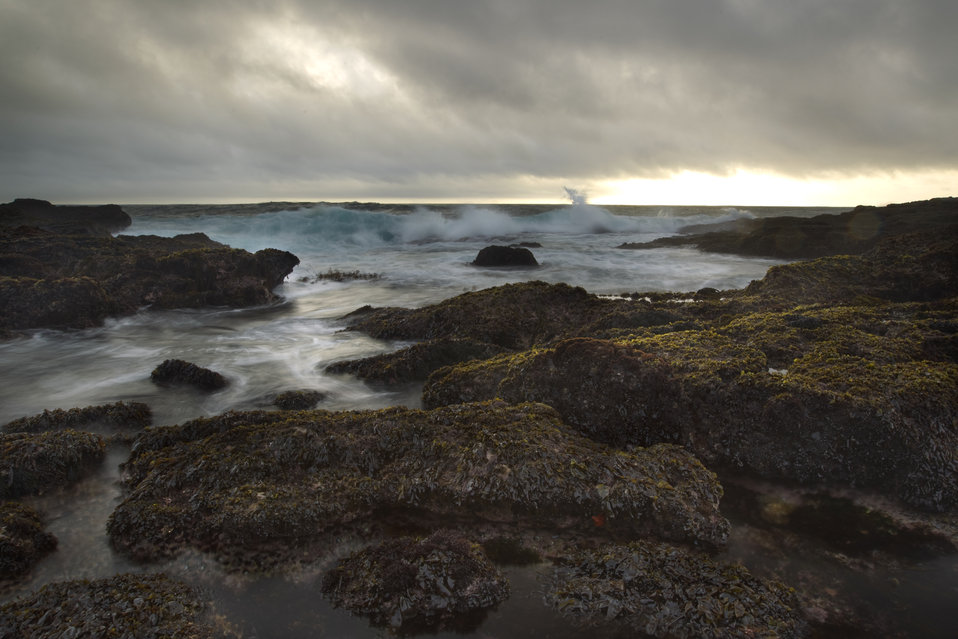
Central California Coast